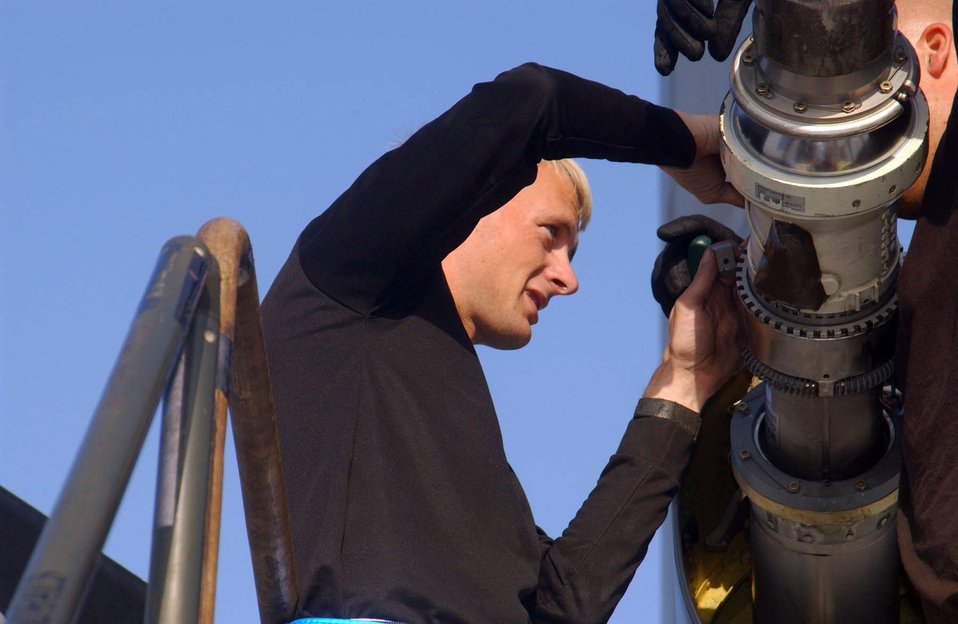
Tanker work

SOUTHWEST ASIA (AFPN) -- Senior Airman Jason Burns installs a boom nozzle on a KC-135 Stratotanker at a forward deployed location in the Persian Gulf region. Airman Burns is with the 380th Expeditionary Aircraft Maintenance Squadron and deployed from McConnell Air Force Base, Kan.